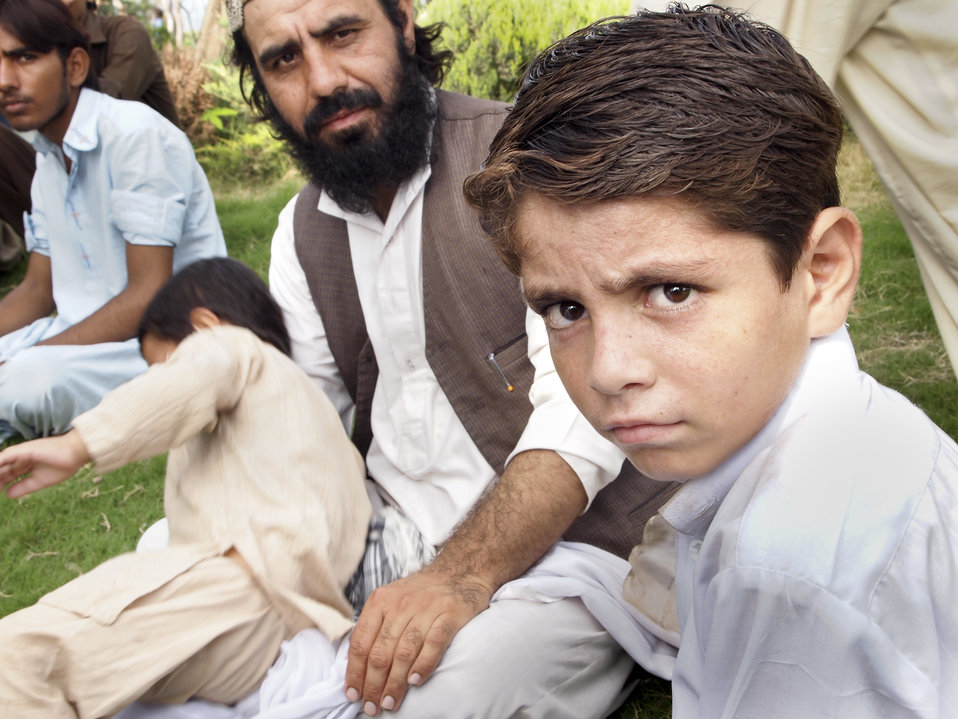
Islamabad, September 24, 2012 – Photo by Noor Za Din, taken at Lake View Park, Rawal Lake, Islamabad - Shot from a USAID-organized 'photo camp' for 16 young aspiring journalists from FATA.